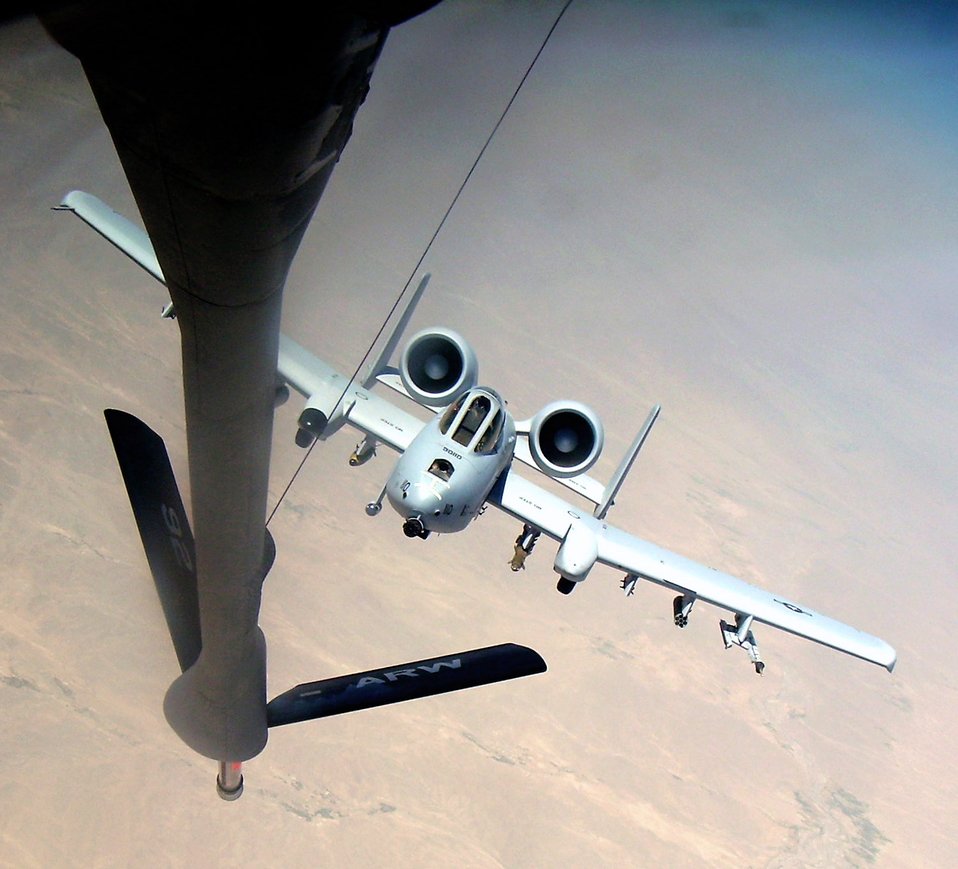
Sept. 30 airpower summary; A-10 Thunderbolts on target

An A-10 Thunderbolt II moves into position behind a KC-135 Stratotanker on a combat mission over Afghanistan. The A-10 is deployed from the 442nd Fighter Wing, an Air Force Reserve unit based at Whiteman Air Force Base, Mo., to Bagram Airfield in support of Operation Enduring Freedom.